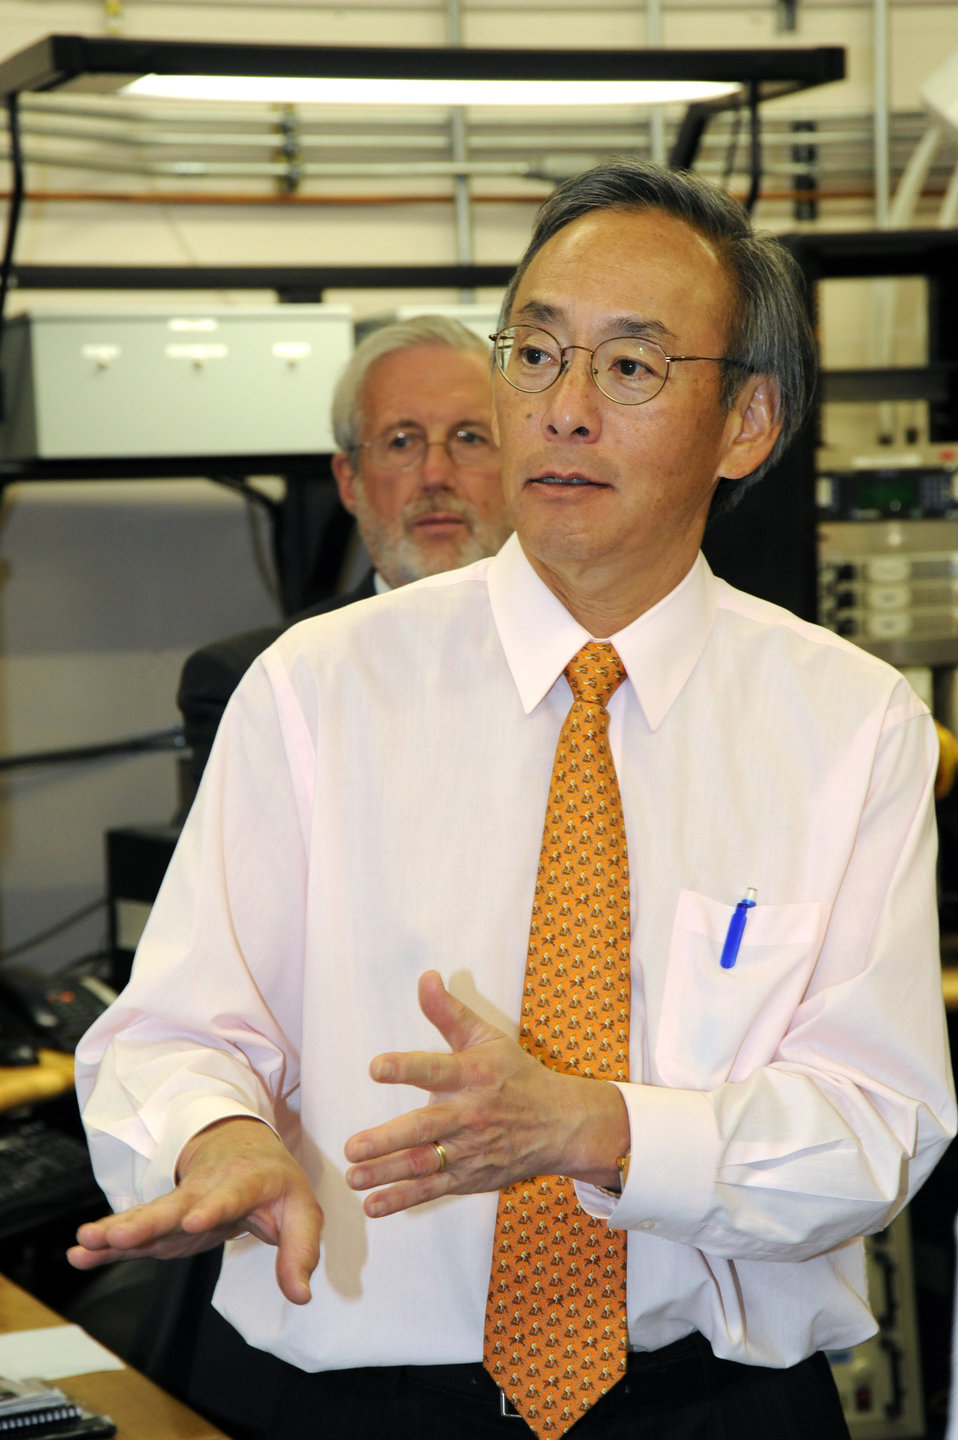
Energy Secretary Steven Chu talks with Idaho National Laboratory scientists concerning the integration of nuclear, fossil and renewable energy systems.